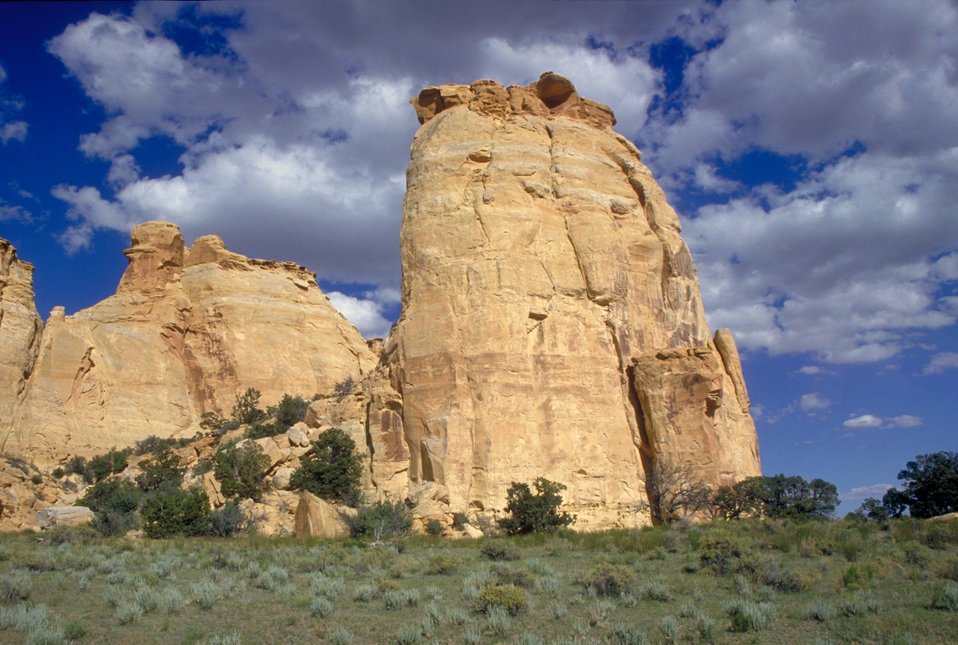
Head of Sinbad, San Rafael Swell